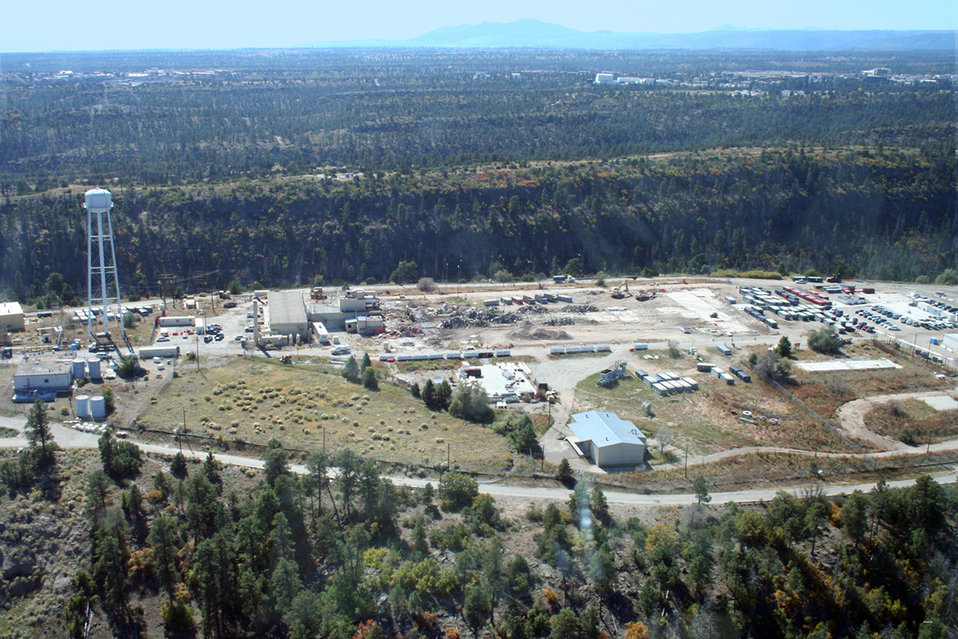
Last Building Demolished at LANL’s DP West

An aerial photo taken in October shows the last two buildings to be demolished at the DP West site.

The last of 14 buildings at the historic DP West site at Los Alamos National Laboratory’s Technical Area 21 (TA-21) was demolished, reducing the Lab’s footprint by more than 100,000 square feet.

The demolition was funded by the American Recovery and Reinvestment Act (ARRA) and is part of $212 million in ARRA funds the Lab received for environmental remediation.